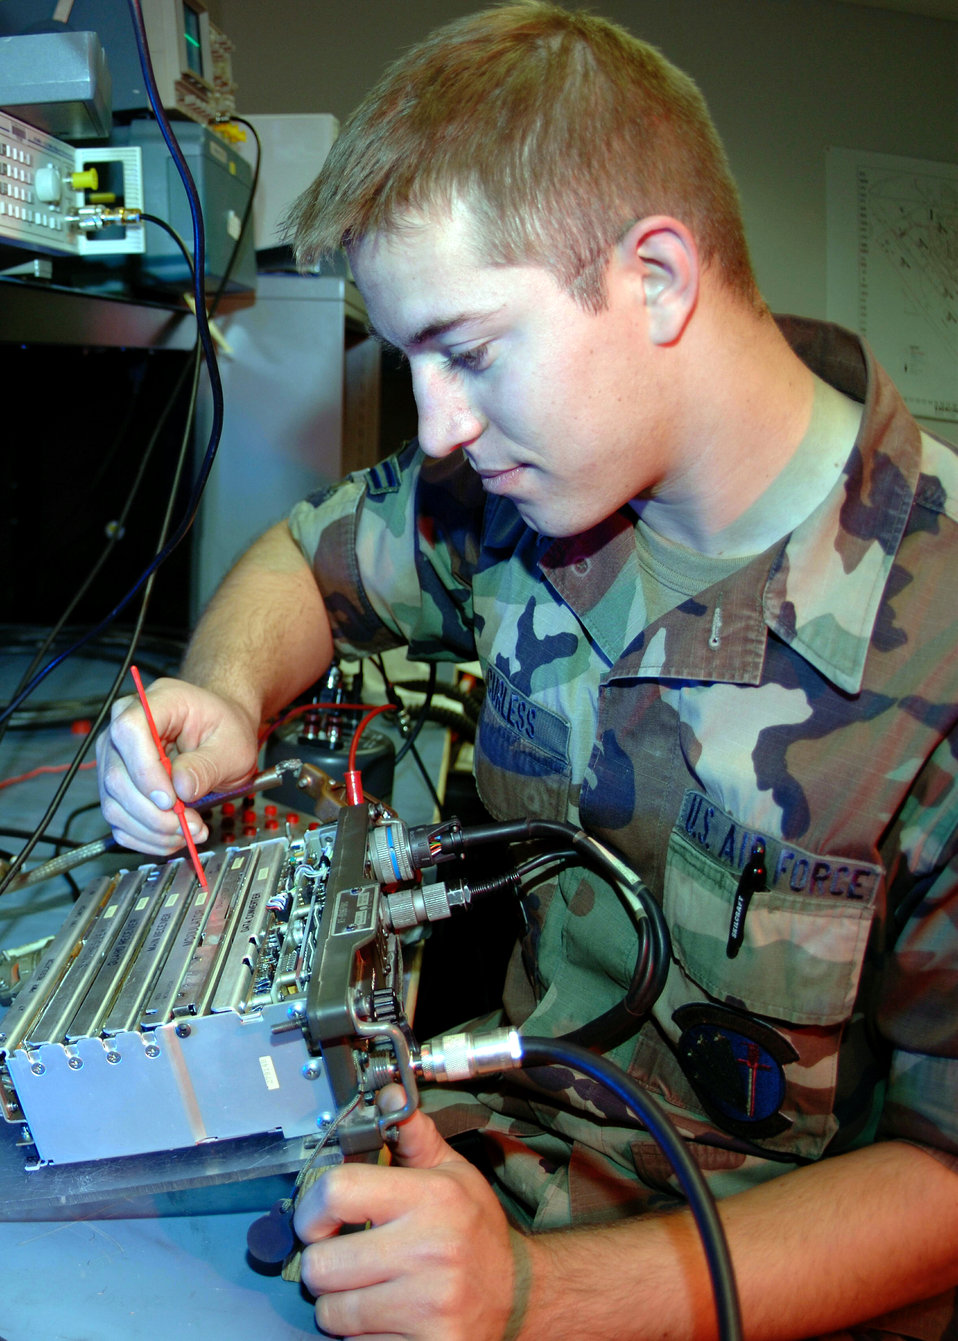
Setting up

DAVIS-MONTHAN AIR FORCE BASE, Ariz. (AFPN) -- Airman 1st Class Heath Curless aligns a modular card on a receiver-transmitter unit. Airman Curless is with the 355th Communications Squadron.